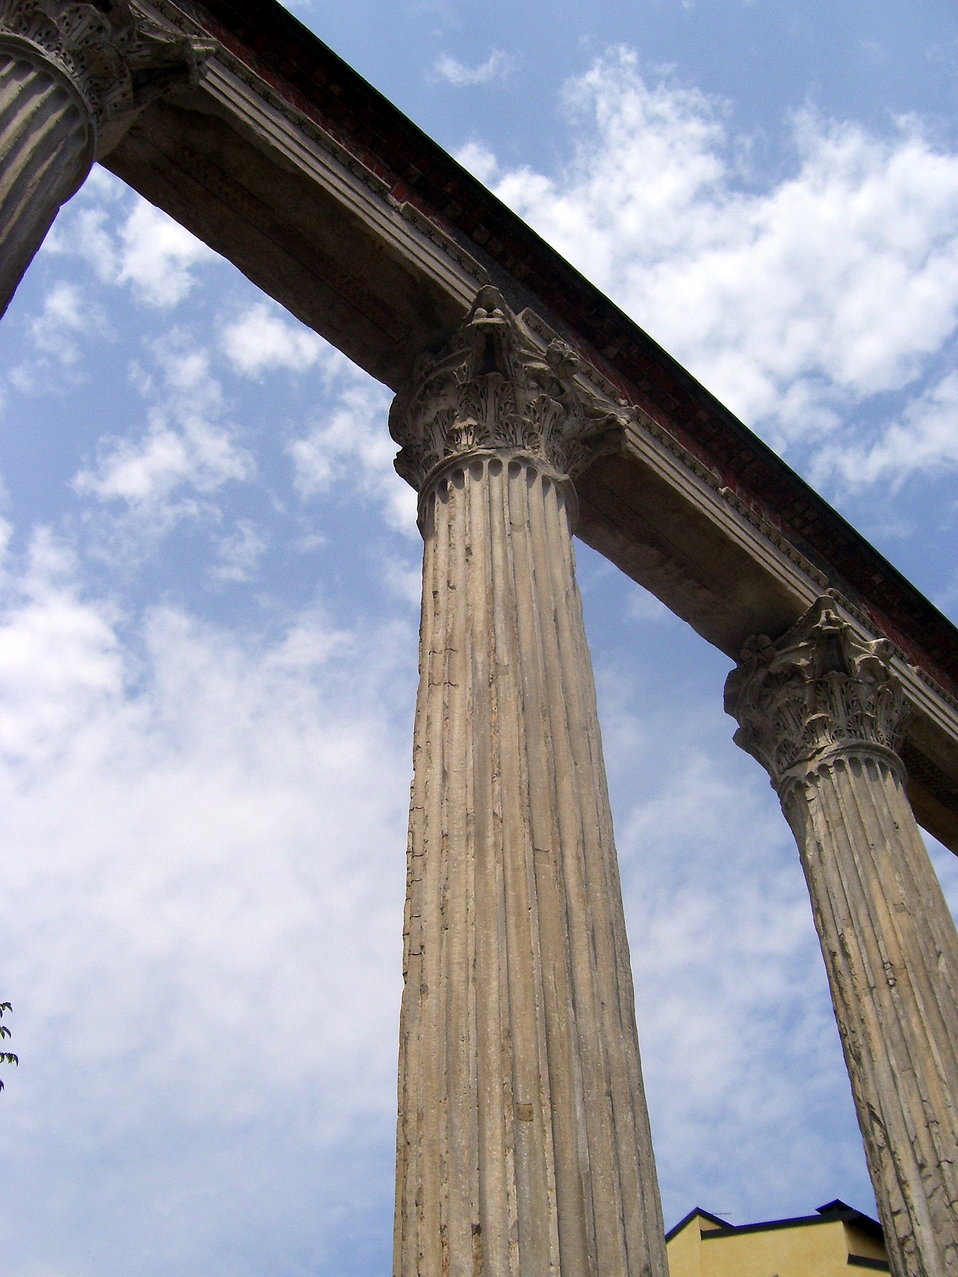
Colonne di San Lorenzo in Milan